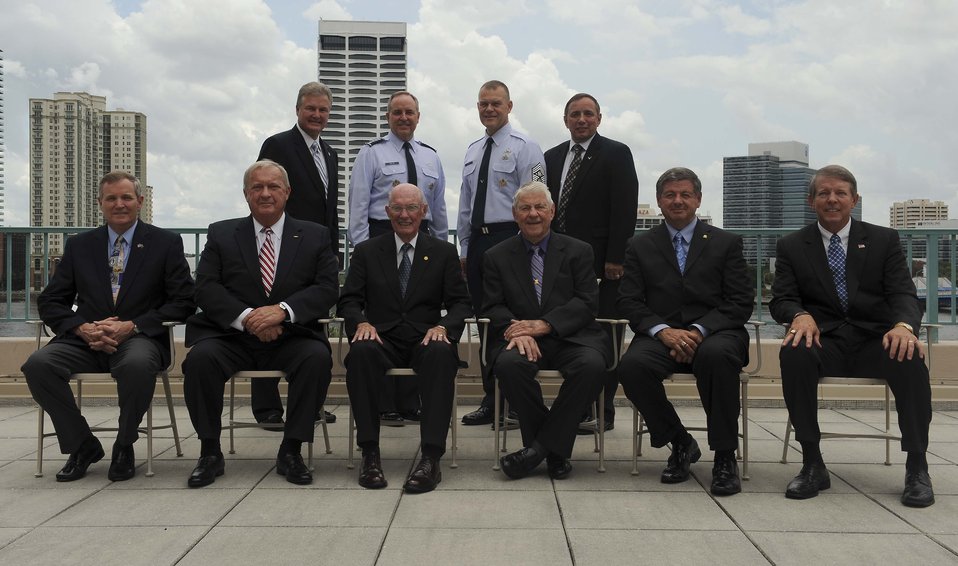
Former CMSAF forum

Air Force Chief of Staff Gen. Mark A. Welsh III and Chief Master Sgt. of the Air Force James Roy pose for a group photo with former chief master sergeants of the Air Force during the Air Force Sergeants Association Convention and Professional Airmen's Conference in Jacksonville, Fla., Aug. 15, 2012. The chiefs attended an annual leadership forum as well as other briefings and forums held throughout the conference.